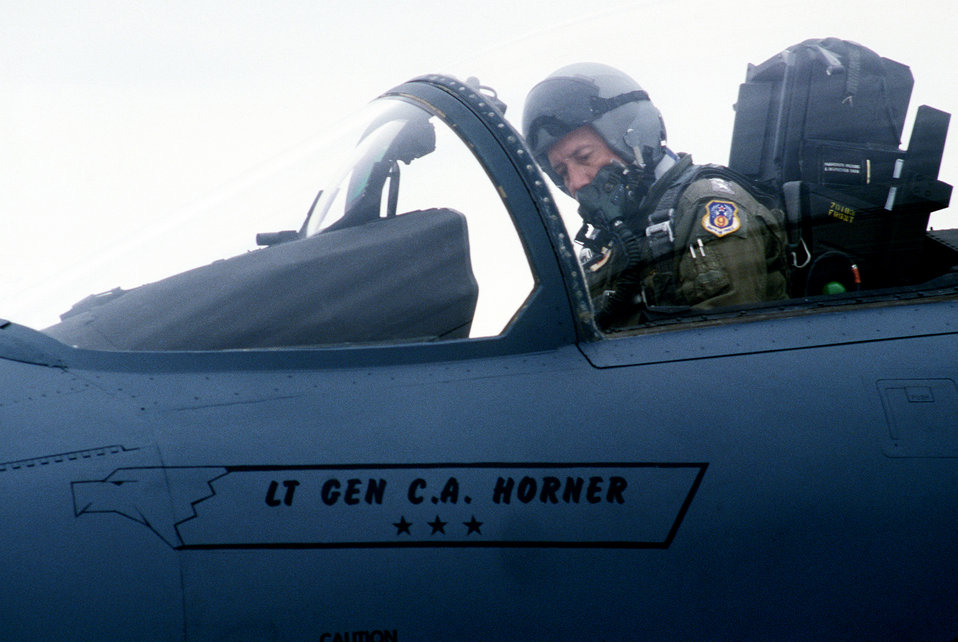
Lt. Gen. Charles A. Horner, 9th Air Force commander, conducts a preflight cockpit check in an F-15E Strike Eagle.